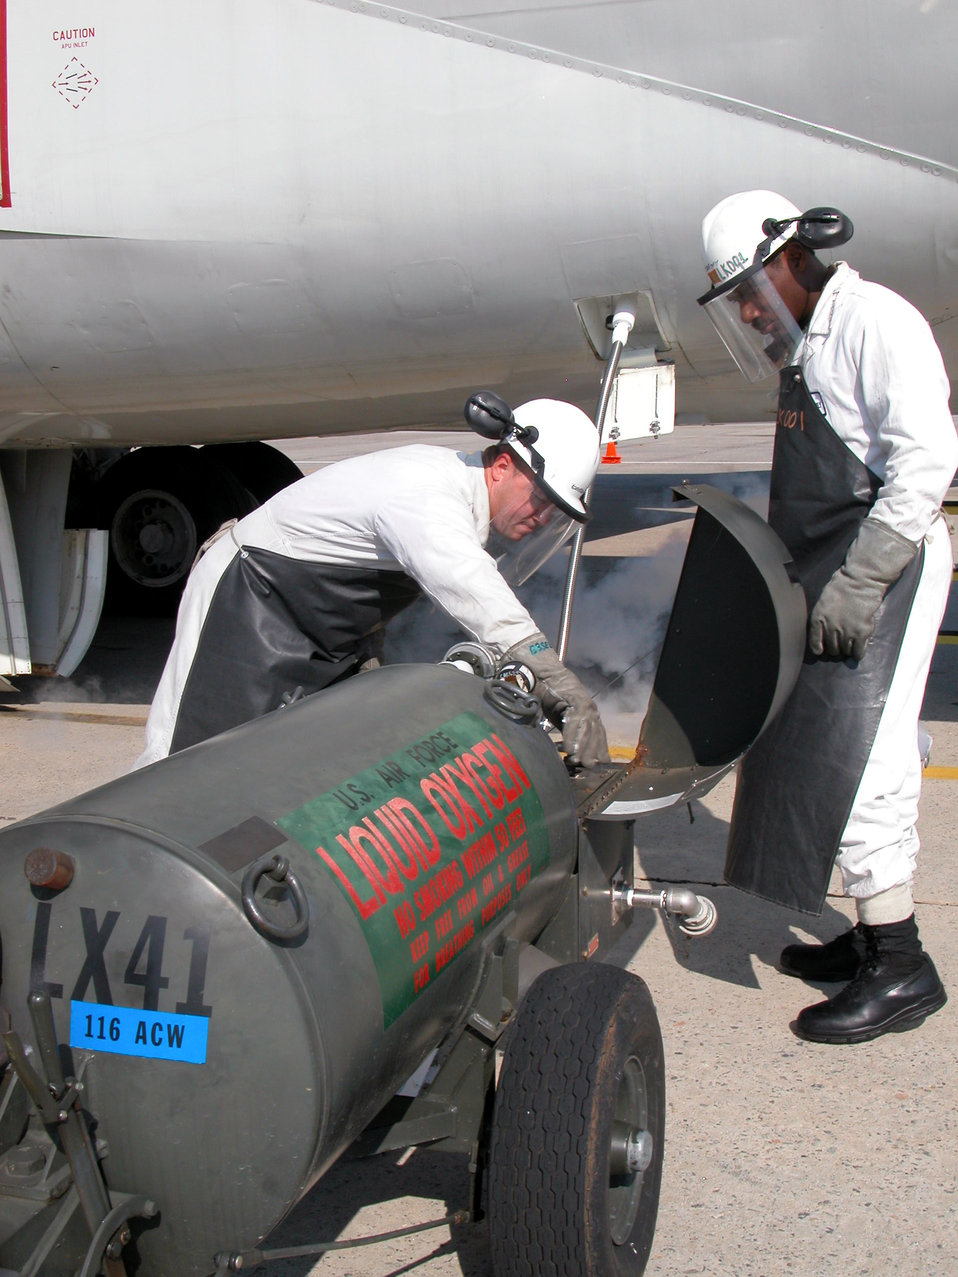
Keeping it cool

ROBINS AIR FORCE BASE, Ga. -- Staff Sgts. Brian Holliman and Dave Houghtaling fill the tank of an E8C JSTARS with liquid oxygen. Holliman is a crew chief with the 116th Air Control Wing and Houghtaling is an Air National Guard technician. Both make up a specialized team that ensures an aircraft has enough LOX to get it through a flight.